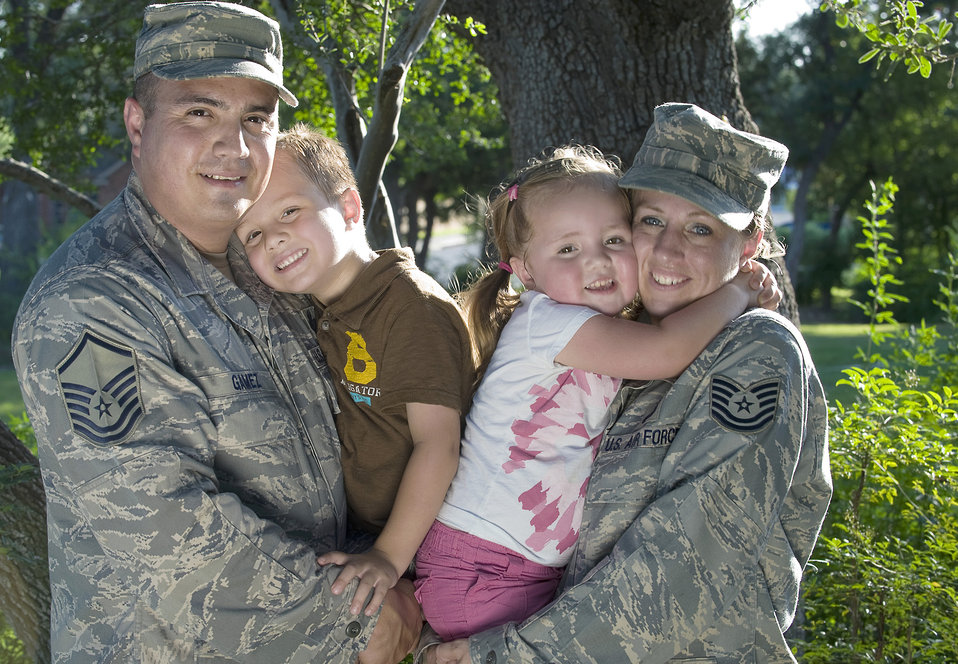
Know before you go

Master Sgt. Rodolfo Gamez and his wife, Tech. Sgt. Christina Gamez, hold their children, Tomas, 4, and Eva, 3, for a portrait outside of their home. The Gamezes are set to deploy to two different locations for year-long deployments later this year.